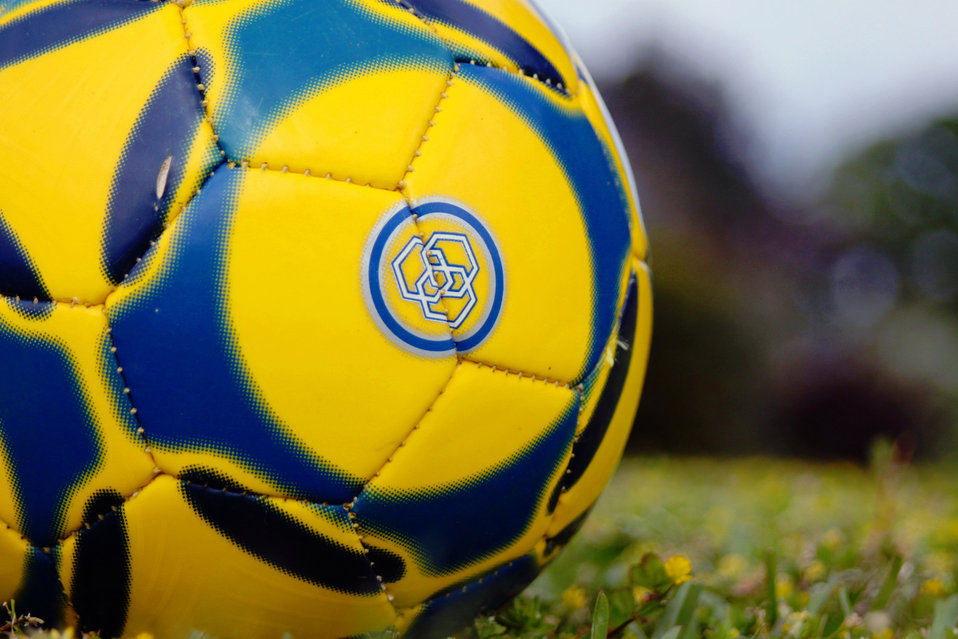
Soccer ball in grass.